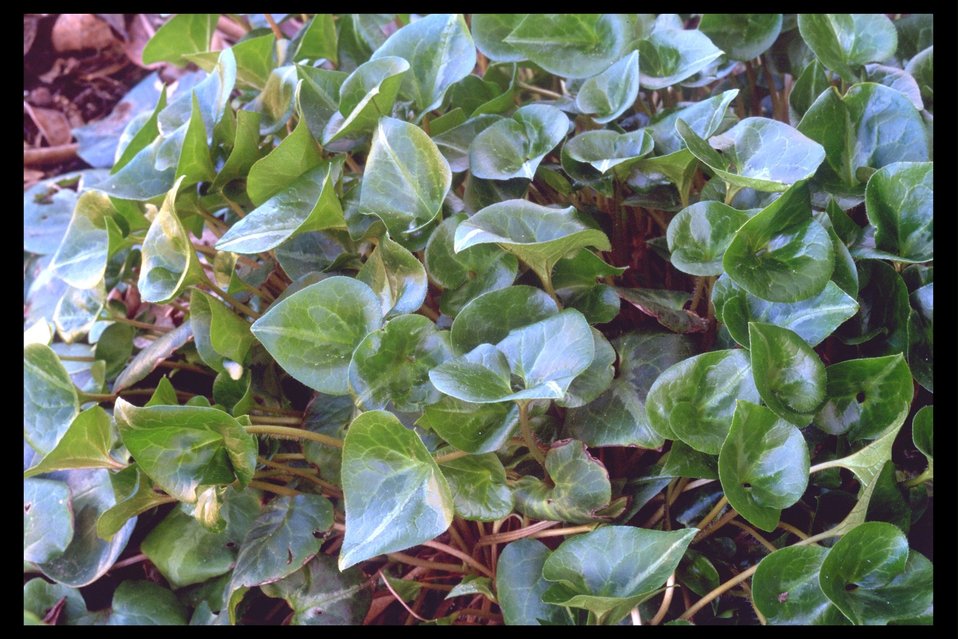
Wild Ginger (Asarum caudatum) at Upper Trail Creek.